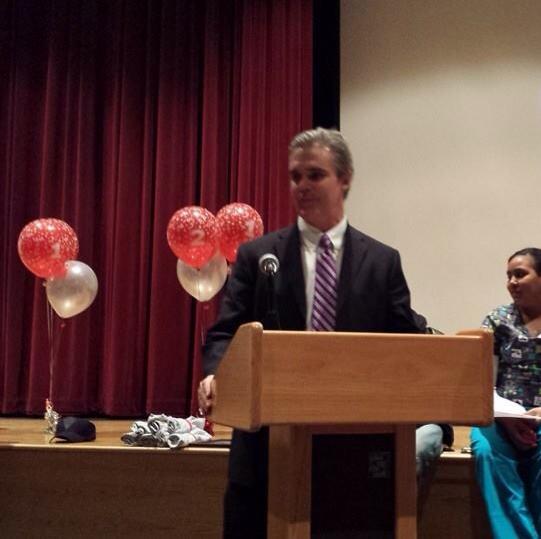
Teens Shattering the Myths in MA

Fitchburg Community Action Team (FCAT) held an after school IQ challenge event as part of its participation in National Drug Facts Week. FCAT joins teens across the U.S. in week-long effort to shatter the myths on drugs Fitchburg, MA. — As part of the NDFW celebration, Fitchburg students hosted a presentation, designed by youth, for youth, to increase awareness of drugs and drug abuse.
Students held a special community assembly at Fitchburg High School.